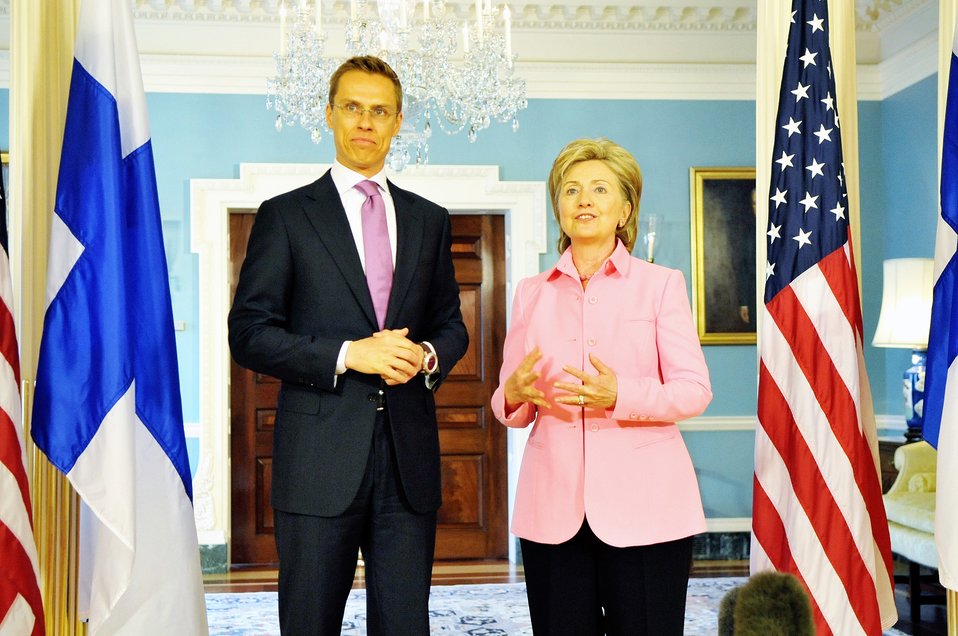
Secretary Clinton Meets With Finnish Foreign MInister

U.S. Secretary of State Hillary Rodham Clinton hosts a bilateral meeting with Finnish Foreign Minister Cai-Goran Alexander Stubb in the Treaty Room of the U.S. Department of State in Washington, DC May 11, 2009.